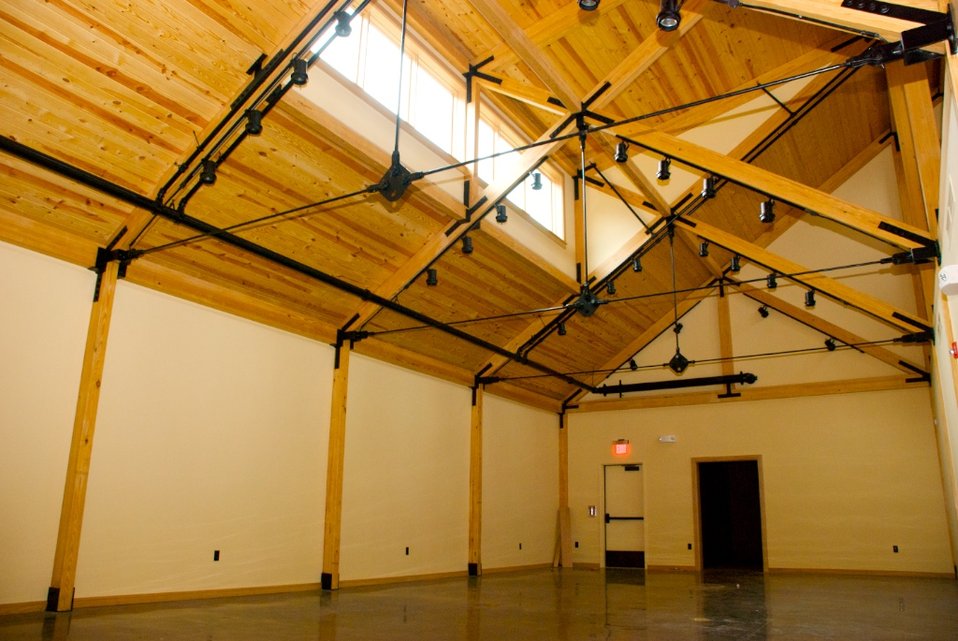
Assabet River NWR Visitor Center

In 2010, the U.S. Fish and Wildlife Service will open the doors to a new energy efficient administrative and visitor center for the Eastern Massachusetts National Wildlife Refuge Complex at the Assabet River refuge in Sudbury, Mass.

American Recovery and Reinvestment Act funding will support the fabrication and installation of exhibits that will enhance visitors' experience with information about the refuge's wildlife, habitats, and recreational opportunities.